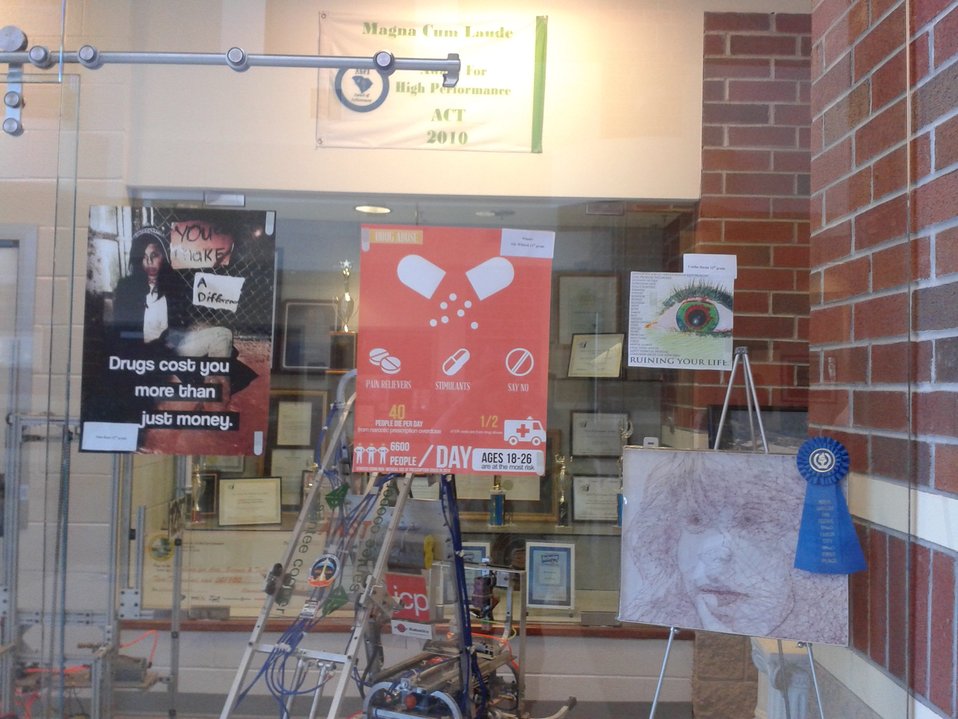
South Carolina's NDFW 2013

Horry County Schools, S.C., Academy for the Arts and Science, and Technology holds NDFW 2013 Event.